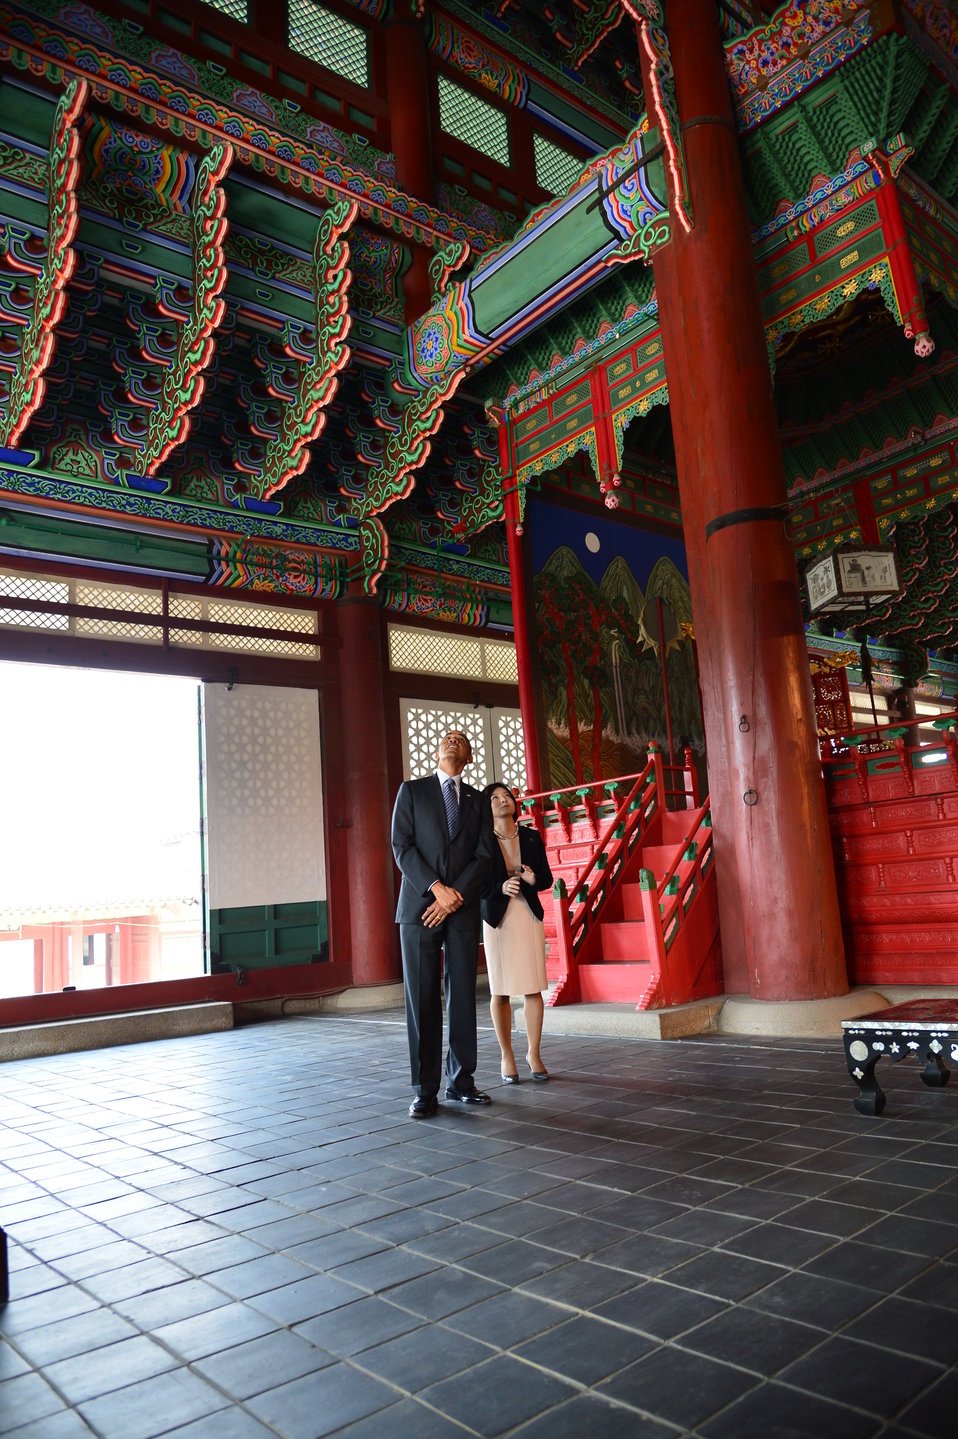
President Obama Visits Gyengbok Palace

President Barack Obama visits Gyengbok Palace with Professor Sang-mi Park from Division of International Studies, Hankuk University of Foreign Studies (HUFS) in Seoul, Republic of Korea on April 25, 2014.